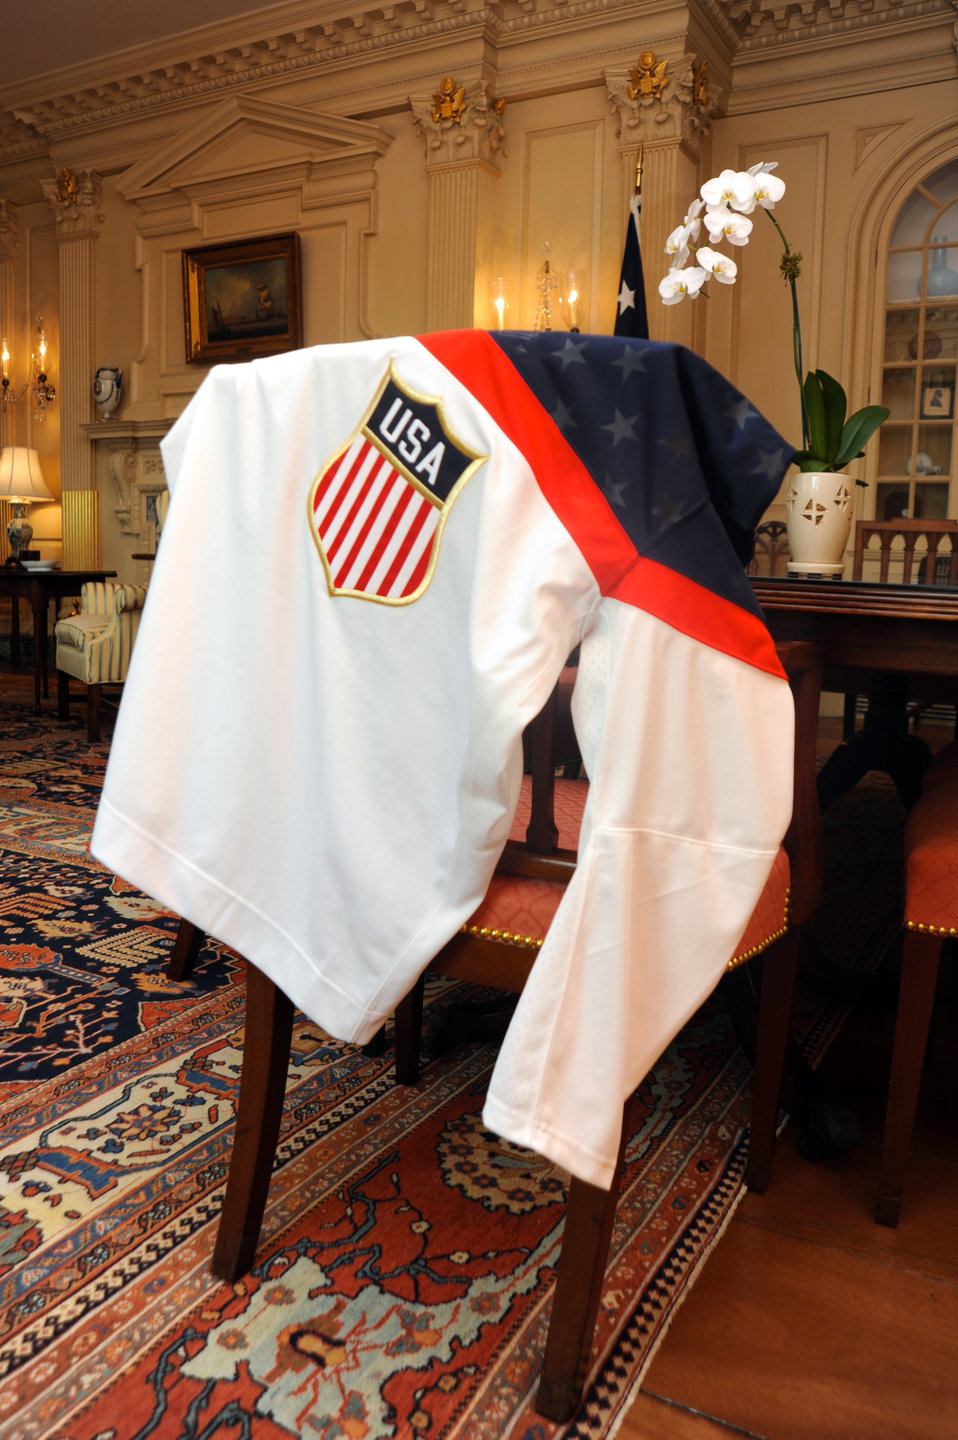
Secretary Kerry's Team USA Hockey Jersey on Proud Display

In preparation for participating in an Olympic send-off event and ceremonial puck drop at the Washington Capitals vs. Winnipeg Jets hockey game, U.S. Secretary of State John Kerry's Team USA hockey jersey is on proud display in his office at the U.S. Department of State in Washington, D.C., on February 6, 2014.